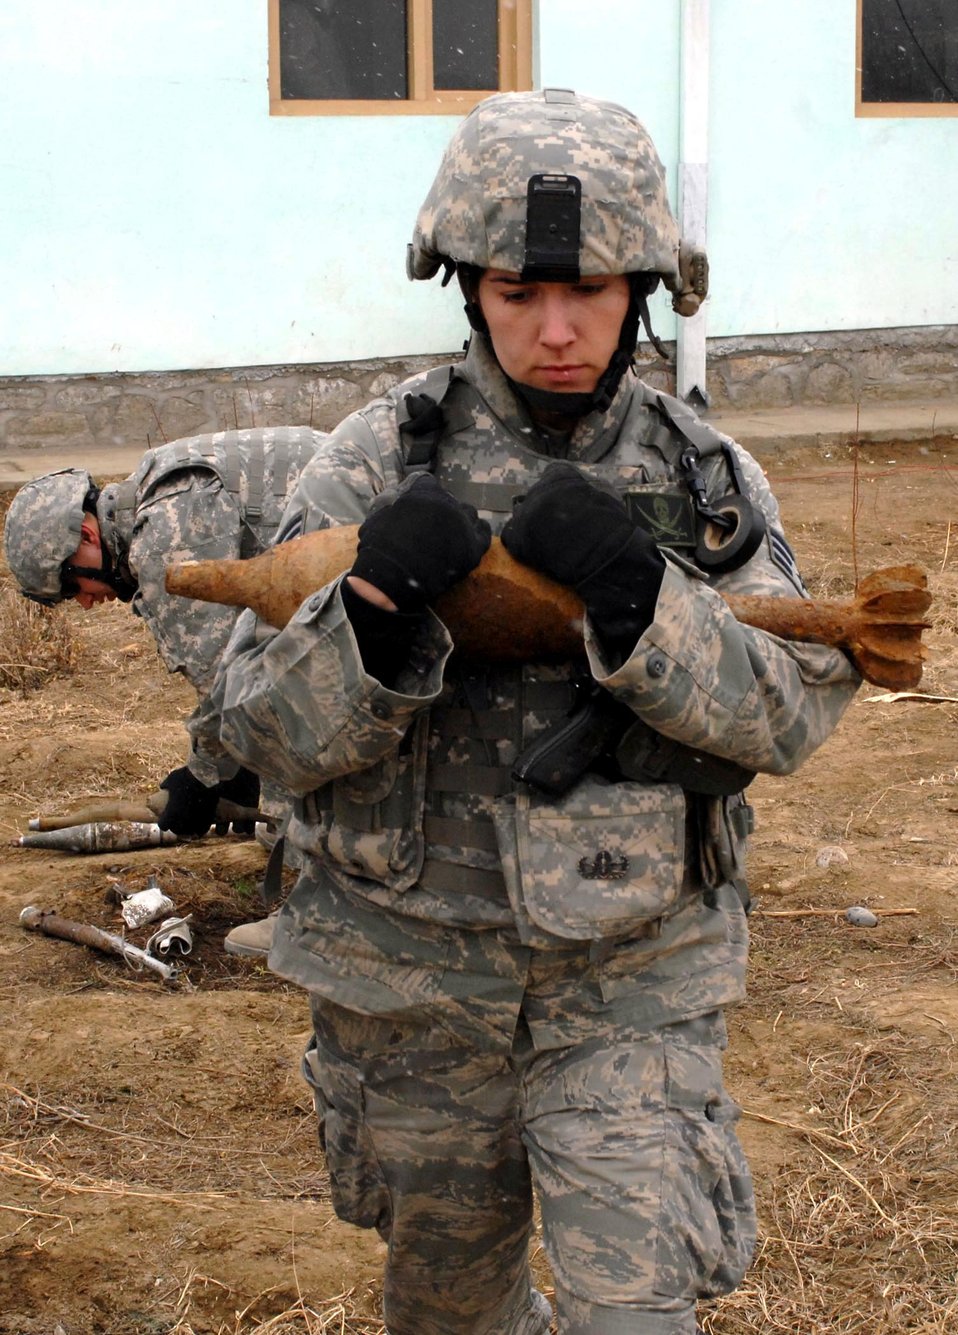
Air Force team aids ANP with UXO disposal

Senior Airman Sarah Burrill carries unexploded ordnance to load onto a joint explosive ordnance rapid response vehicle here Feb. 2. Airman Burrill is a member of the explosive ordnance disposal team that removed and destroyed UXOs gathered by the Kohistan II Afghanistan National Police.